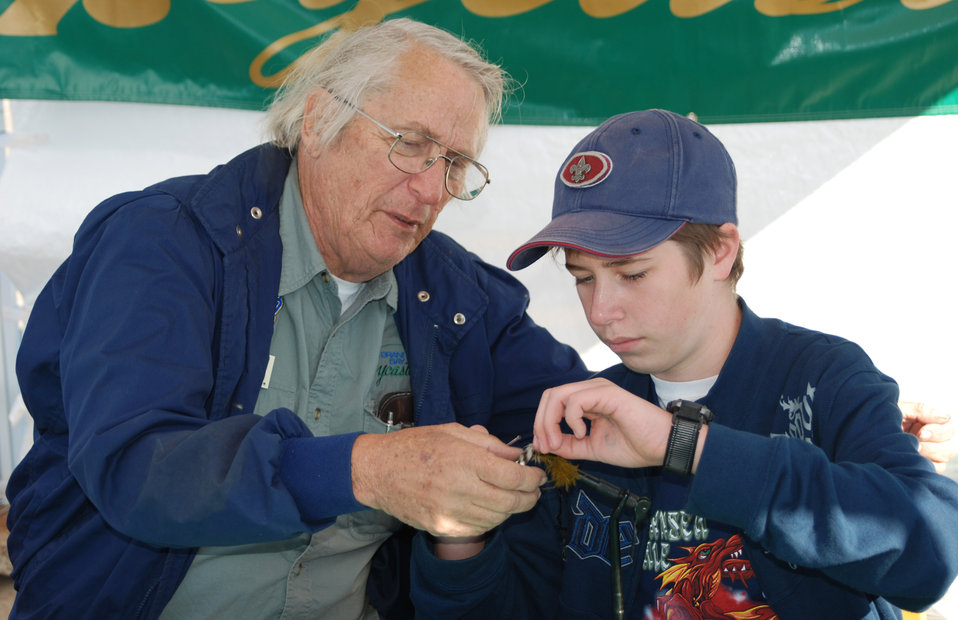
Beale hosts Boy Scout expo

Pete Peterson of Granite Bay Flycasters assists Ethan Cavender, 12, with tying a fly fishing lure during the 2007 Boy Scout Expo Sept. 29 at Beale Air Force Base, Calif.